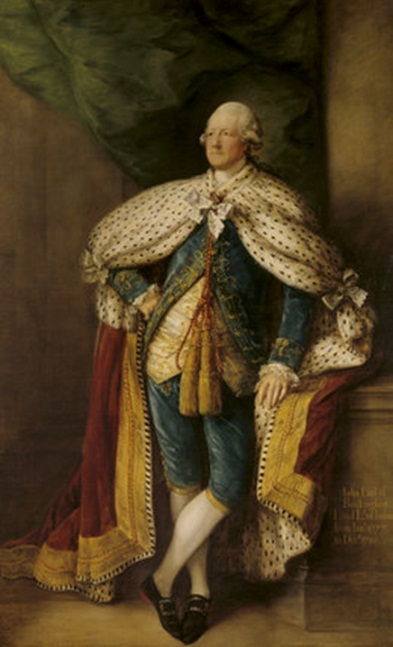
2ndEarlOfBuckinghamshire